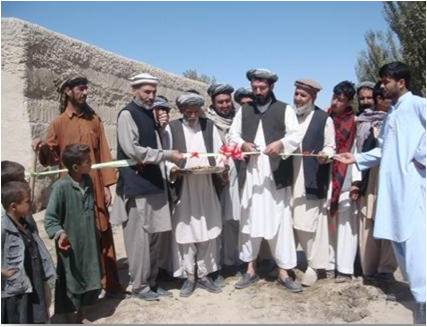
Making the Roads More Traveled